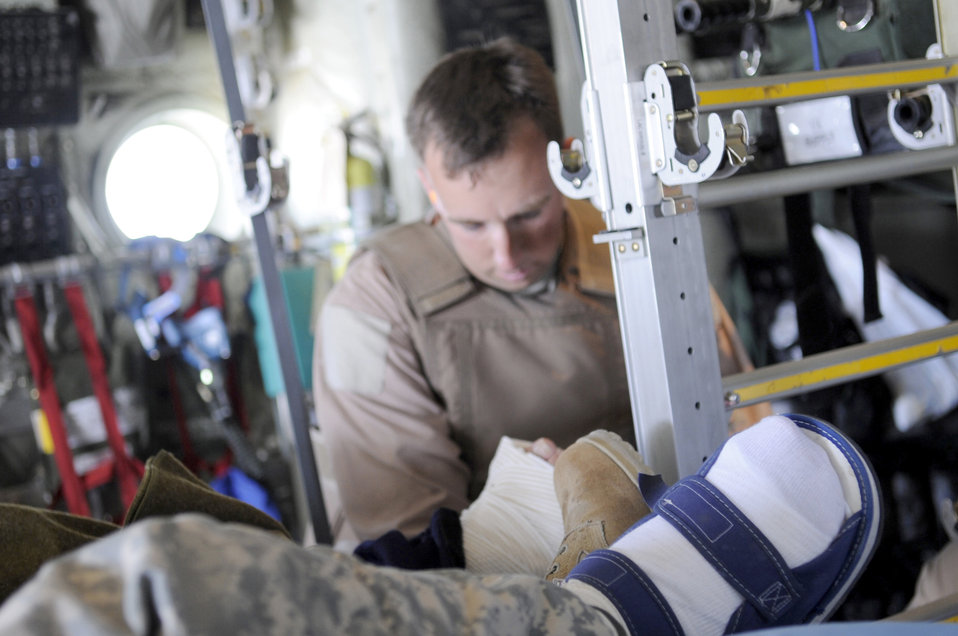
Aeromedical evacuation missions

Tech. Sgt. Thomas Grantland secures the litter onto a C-130J Hercules after loading a patient June 9 at Kandahar Airfield, Afghanistan. Sergeant Grantland is assigned to the 451st Expeditionary Aeromedical Evacuation Squadron.